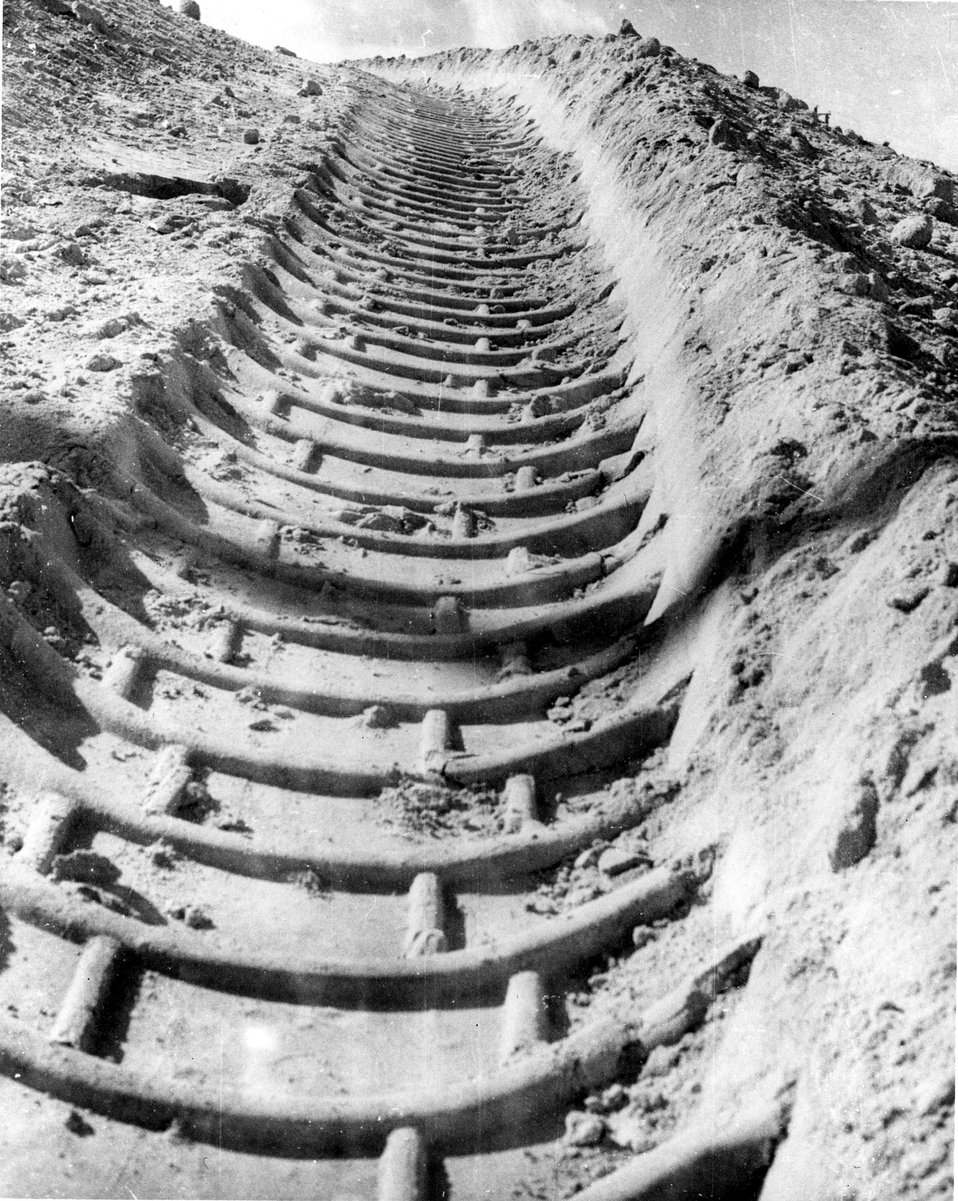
At Union Carbide's uranium mine in the Gas Hills of Wyoming workers help relieve the energy crisis by producing concentrates for America's nuclear power plants. c. 1976